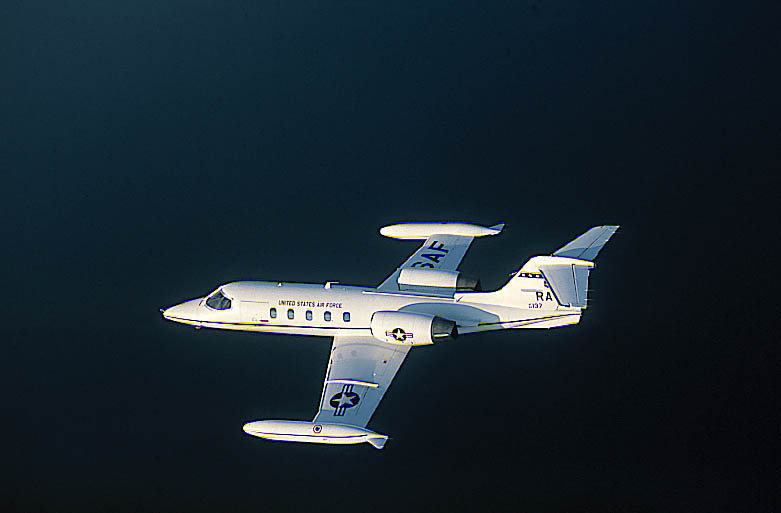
C-21

FILE PHOTO -- The C-21A provides cargo and passenger airlift and can transport litters during medical evacuations. The C-21A's turbofan engines are pod-mounted on the sides of the rear fuselage. The swept-back wings have hydraulically actuated, single-slotted flaps. The aircraft has a retractable tricycle landing gear, single steerable nose gear and multiple-disc hydraulic brakes. The C-21A can carry eight passengers and 42 cubic feet (1.26 cubic meters) of cargo. The fuel capacity ofthe C-21A is 931 gallons (3,537.8 liters) carried in wingtip tanks. The safety and operational capabilities of the C-21A areincreased by the autopilot, color weather radar and tactical air navigation (TACAN) system, as well as HF, VHF and UHF radios.